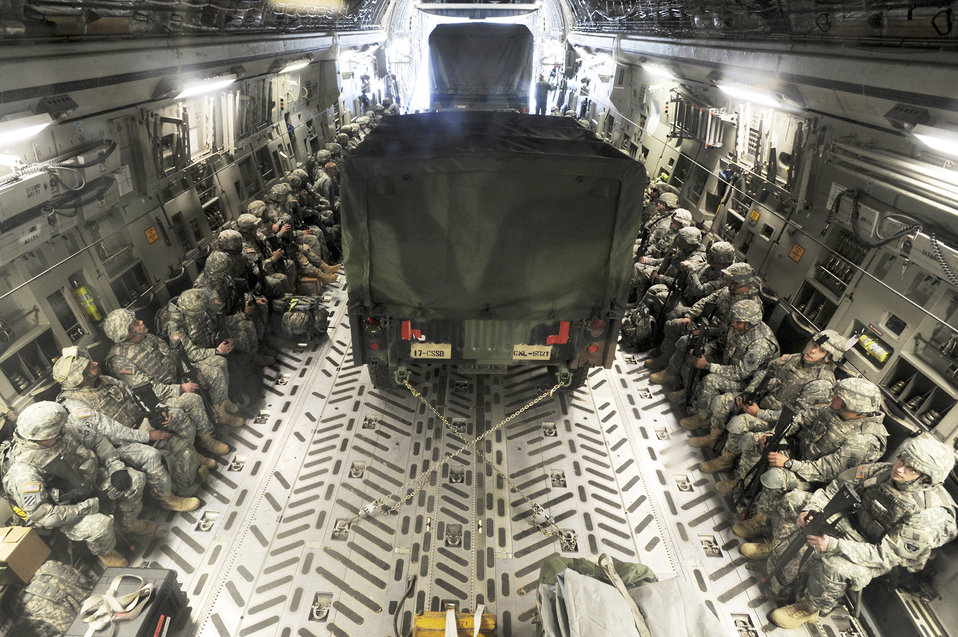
Are we there yet?

Members from the 17th Combat Service Support Battalion out of Fort Richardson, Alaska, wait on board a C-17 Globemaster III before take off Aug. 24 at Elmendorf Air Force Base, Alaska, for Arctic Response. Arctic Response is a joint operation and total force integration exercise where Air Force active-duty and National Guard members aid the Army in deploying to the exercise site.